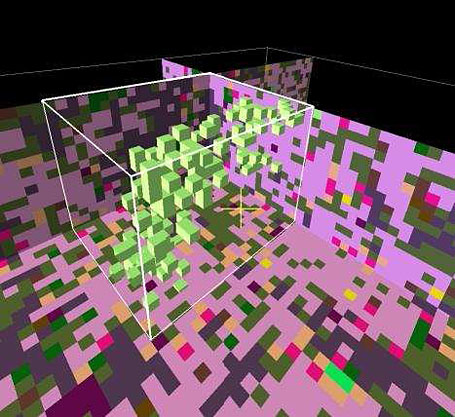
A portion of the cement hydration data set output from CEMHYD3D. The user has interactively specified a region of interest (the small box) and the software is showing only the subset of the 3D data that is within that box, while simultaneously displaying orthogonal cross-sections based on the position of the region of interest box.